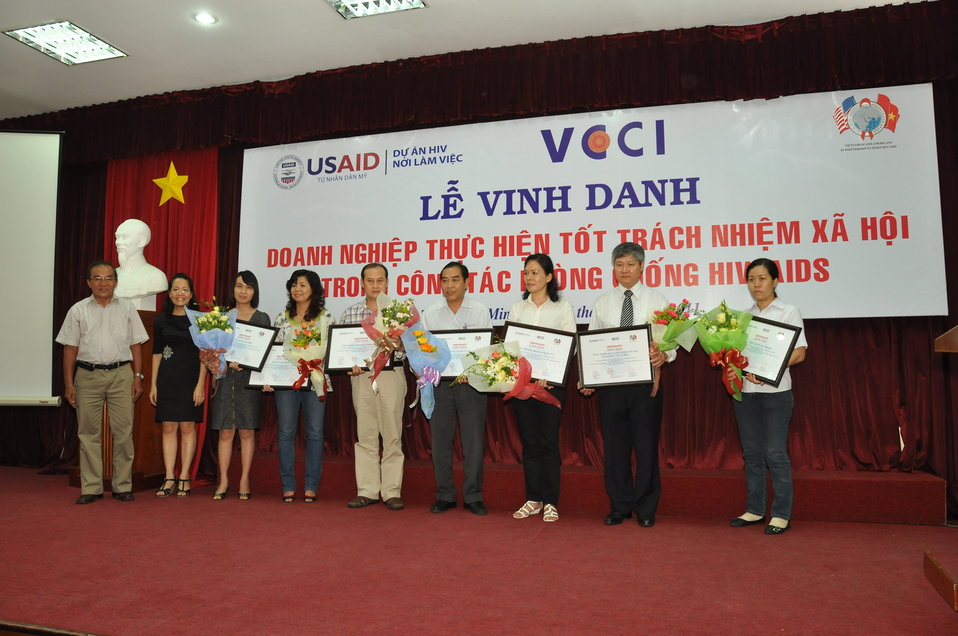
USAID and VCCI present certificates to enterprises active in HIV awareness and support

Award ceremony in Ho Chi Minh City on November 16, 2011